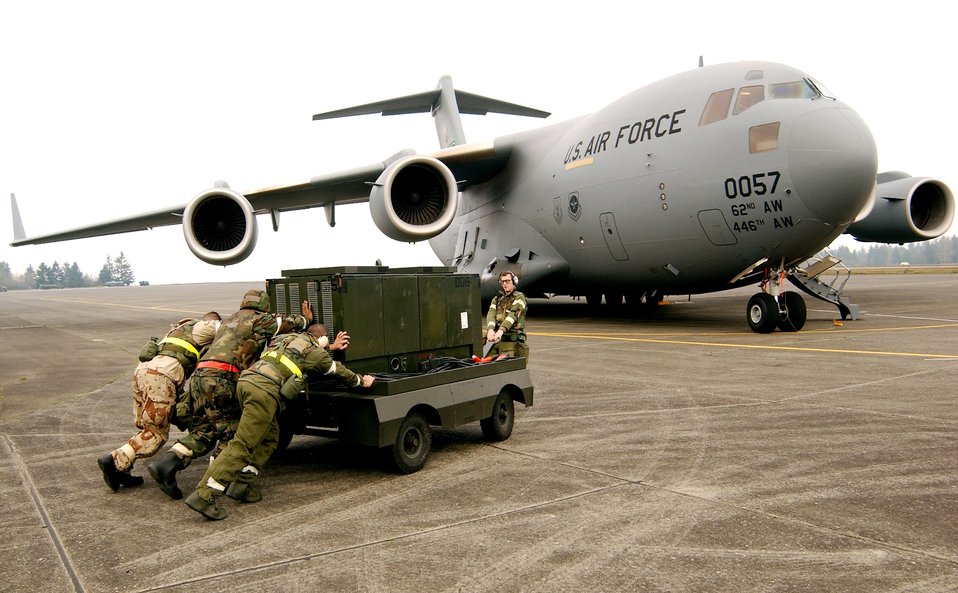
Mobility exercise

MCCHORD AIR FORCE BASE, Wash. -- Airmen push an 86 diesel generator in place after the C-17 Globemaster III lands here during a Mobility Exercise here. This exercise, the second of four the base will hold to increase war fighting skills and prepare for an upcoming expeditionary operational readiness inspection.